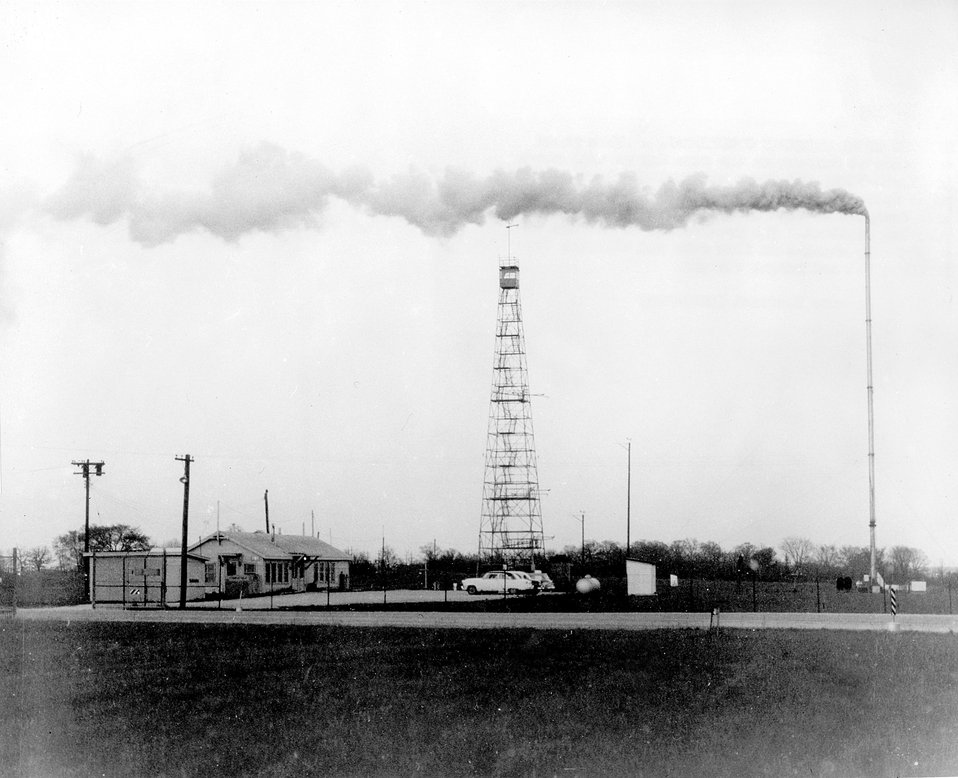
Typical plume behavior under moderately stable conditions.
c.1968